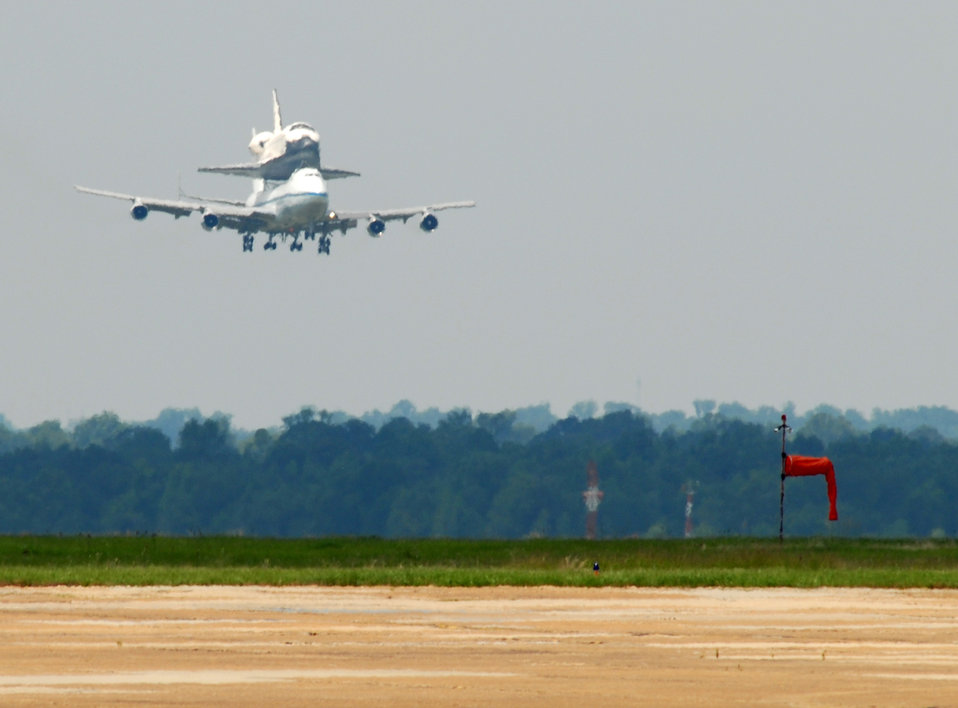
Photo essay: Shuttle transitions through Air Force bases

Space Shuttle Atlantis riding atop a NASA-modified Boeing 747 Shuttle Carrier Aircraft makes its final approach before landing June 2 at Columbus Air Force Base, Miss. The base was the shuttle's final stop for fuel before finishing its journey to Kennedy Space Center in Florida.